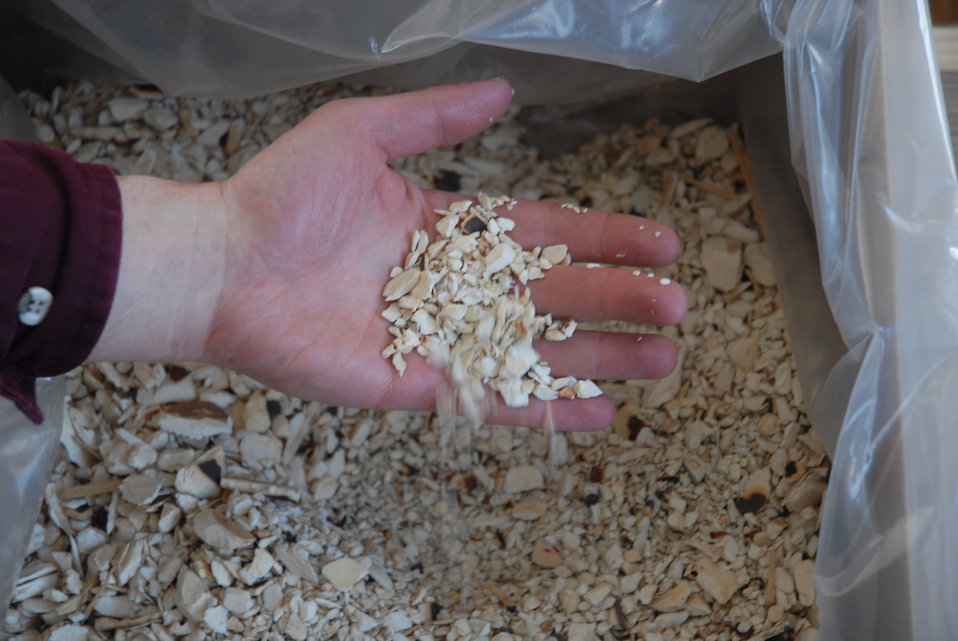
Ivory that has been Crushed.